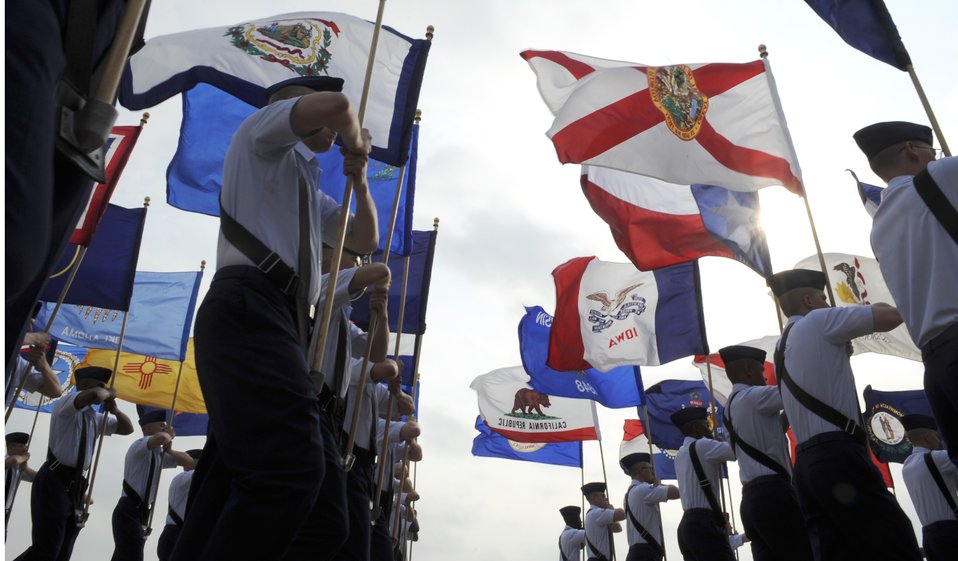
From basic trainee to Airman

Basic trainees carry state flags during their graduation ceremony April 24 at Lackland Air Force Base, Texas.